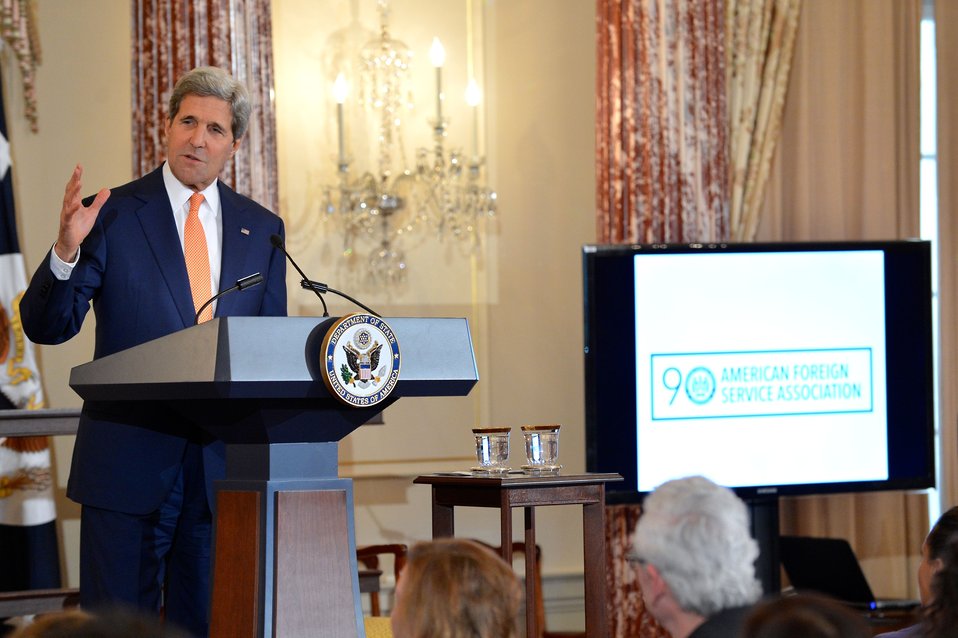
Secretary Kerry Celebrates the 90th Anniversary of the U.S. Foreign Service

U.S. Secretary of State John Kerry delivers remarks at an event celebrating the 90th Anniversary of the United States Foreign Service at the U.S. Department of State in Washington, D.C., on May 22, 2014. The modern Foreign Service was created on May 24, 1924, with the passage of the Rogers Act establishing the current merit-based, professional Foreign Service.